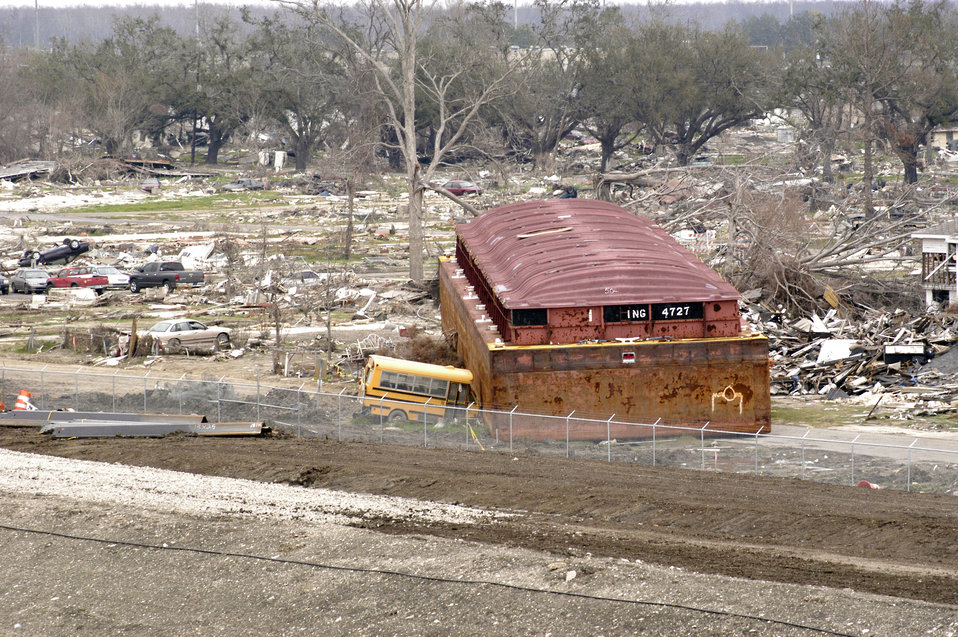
A barge breached a levee in the ninth ward in New Orleans, LA, as a result of the 20-foot storm surge from Hurricane Katrina. A small school bus was crushed under the barge as the floodwaters receded. Katrina made landfall on Monday morning, August 29, 2005 as a Category 3 hurricane with sustained winds of 125/mph with over a 20-foot storm surge. Katrina caused catastrophic damage over 90 thousand square miles across Louisiana with an estimated $75 billion dollars in damage. The total economic impact to the Gulf Coast was estimated at over $150 billion. 80% of New Orleans, LA, was underwater with some areas more than 20 feet deep. Less than a month later southern Louisiana was struck by a second Category 3 hurricane Rita inflicting more damage in the southwestern areas of Louisiana adding an addition $12 billion worth of damage to the already beleaguered state. The U.S. Army Corps of Engineers (USACE) under the auspices of Federal Emergency Management Agency (FEMA) was the lead service in providing assistance to the citizens of Louisiana. The U.S. Department of Agriculture (USDA) supplied emergency food aid, emergency loan assistance to farmers and home owners, and USDA personnel from around the nation volunteered their time and muscle to aid in the recovery operations.